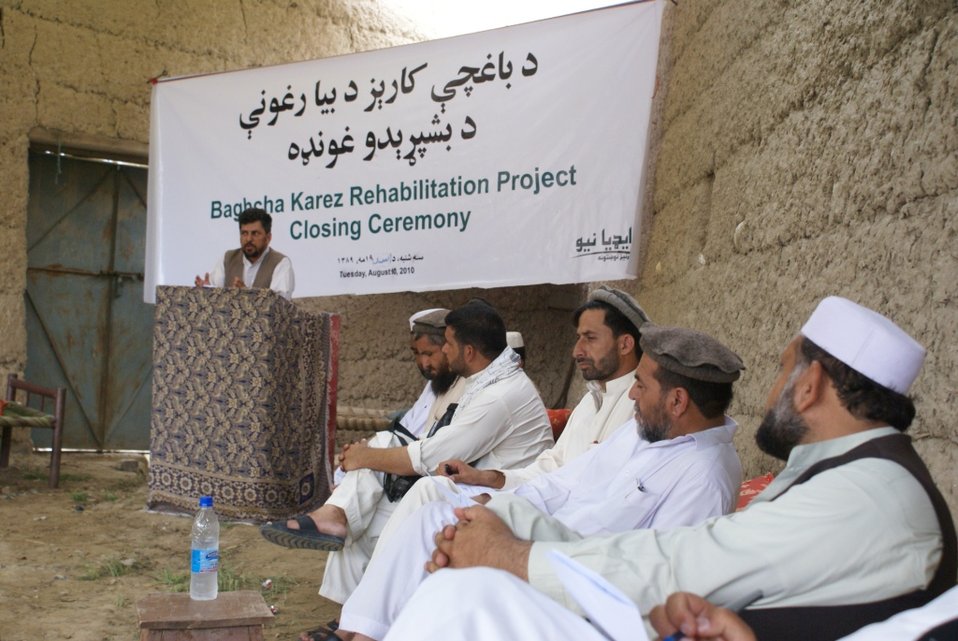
بازسازی کاریز باغچه در ولسوالی شینوار ولایت ننگرهار